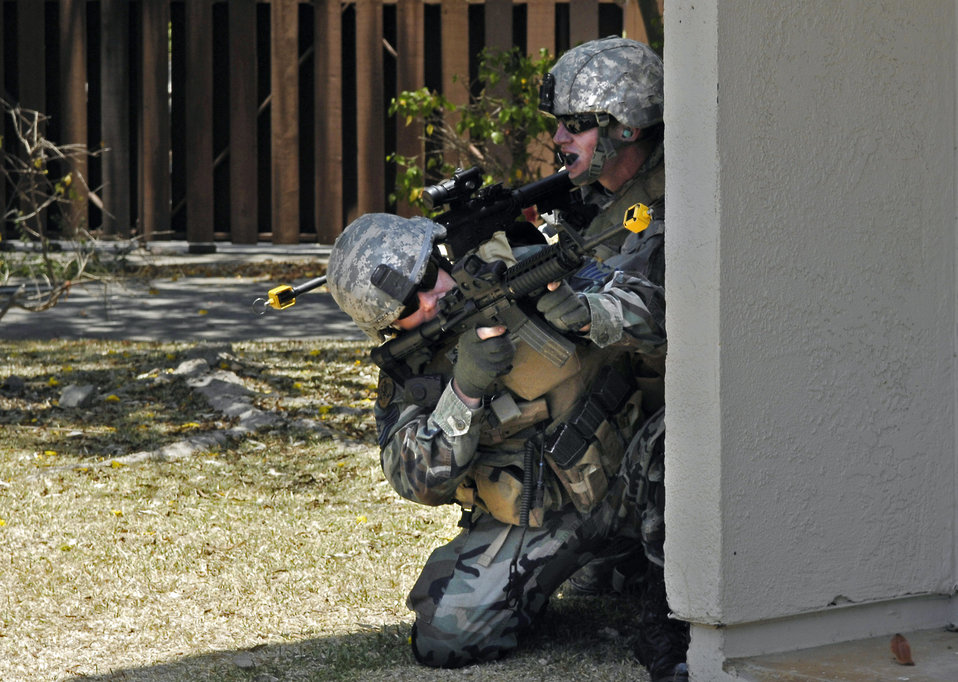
Battlefield Airmen train on Hickam

Tech. Sgt. Richard Setlock (left) and Airman 1st Class Daniel Meyer, joint terminal attack controllers, execute their attack plan during close-quarters battle training May 7 at Hickam Air Force Base, Hawaii. The JTACs were using an old housing area on Hickam AFB to conduct realistic training in an urban environment. Both Airmen are assigned to the 25th Air Support Operations Squadron at Wheeler Army Air Field, Hawaii.